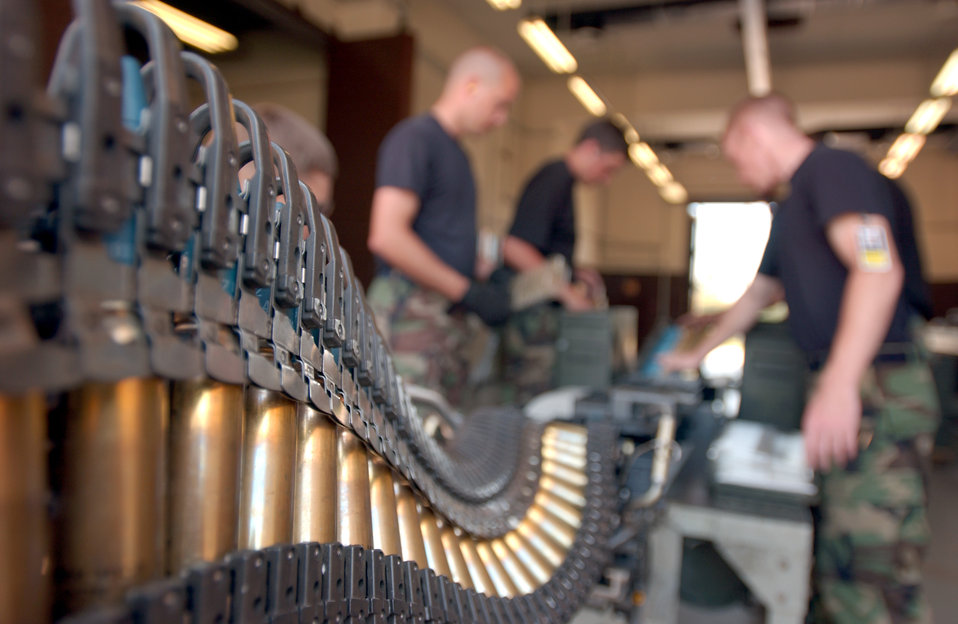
Falcons reloaded

AVIANO AIR BASE, Italy -- Members of the 31st Maintenance Squadron upload 20 mm target-practice ammunition onto the universal ammunition loading system here June 30. The 31st MXS is responsible for preparing the target-practice ammunition used by F-16 Fighting Falcon aircraft here during training and real world missions.